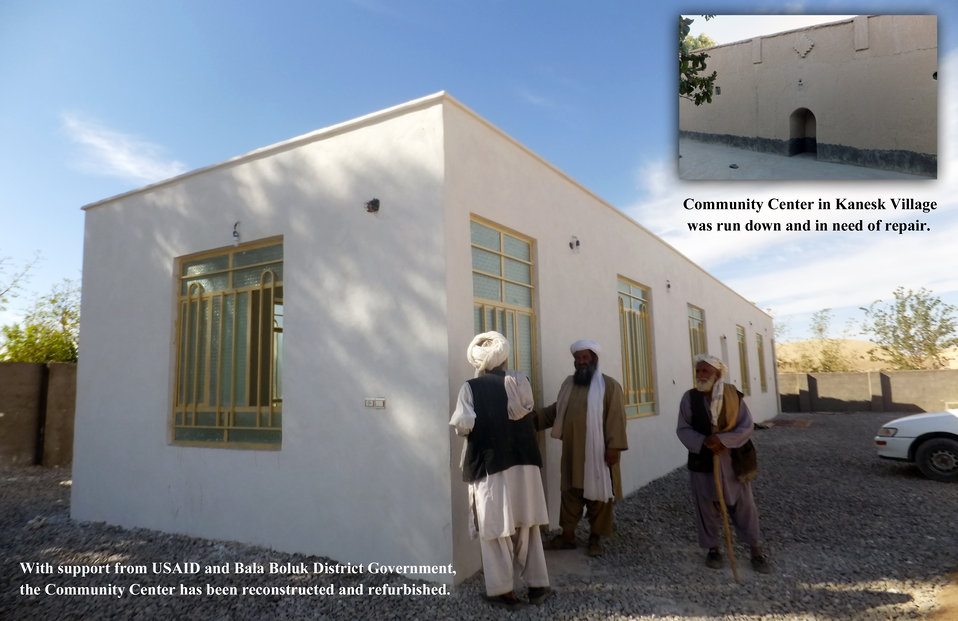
Community Center outside